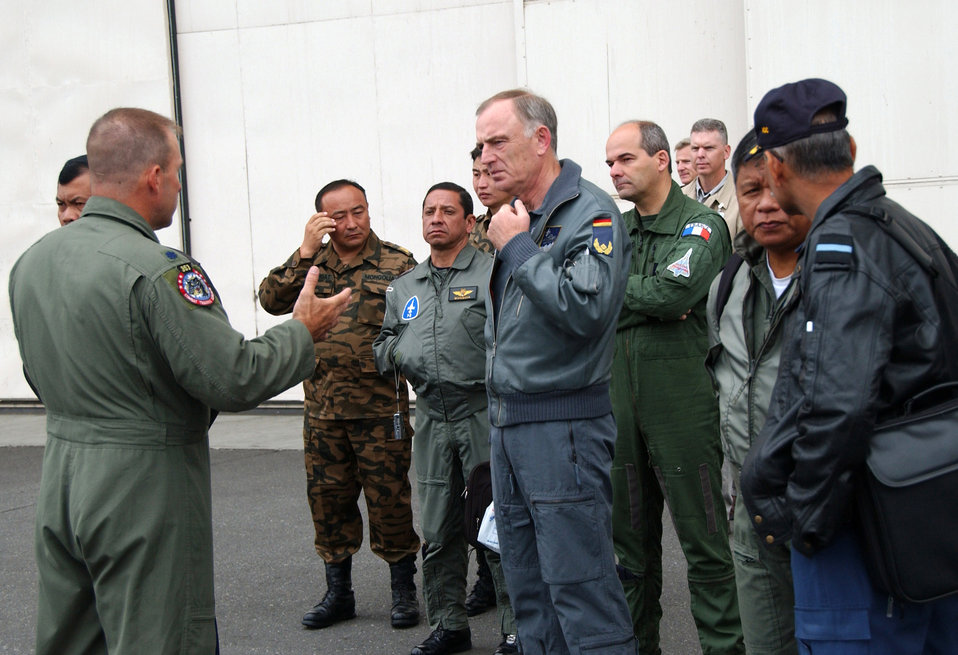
International officers observe Red Flag-Alaska

More than a dozen international officers visit Eielson Air Force Base, Alaska, July 23 to observe Red Flag 07-3 operations. International partners include Japan, Mongolia, Spain, Thailand, Turkey and NATO. Red Flag-Alaska is focused on improving the combat readiness of U.S. and coalition forces and providing training for units preparing for air expeditionary force taskings.